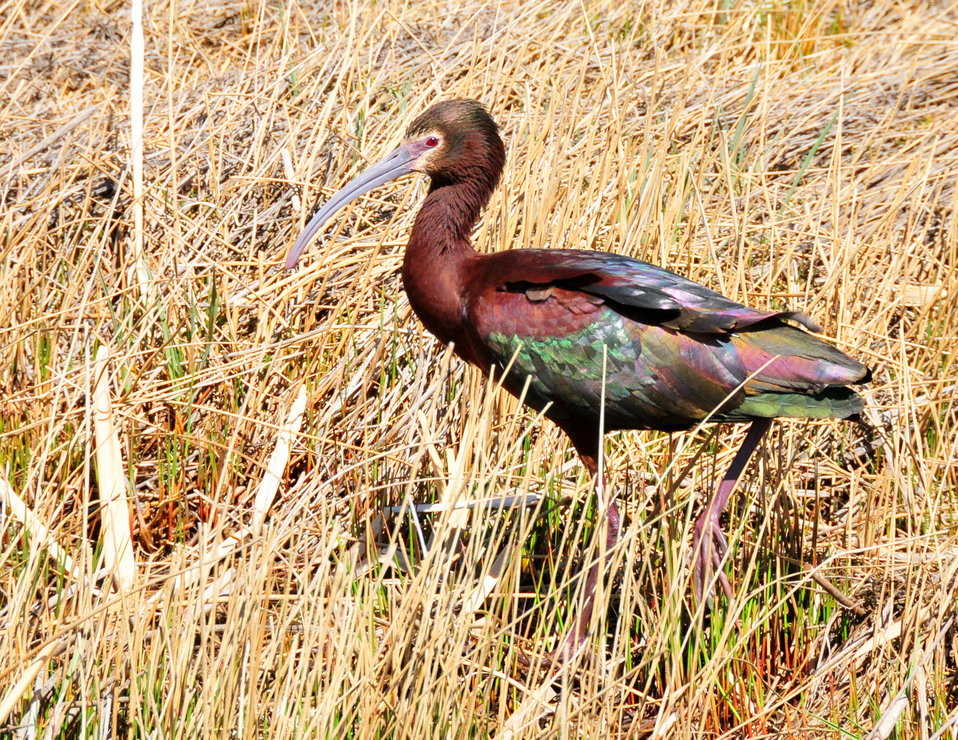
White-faced ibis on Seedskadee NWR

A white-faced ibis feeding in seasonal wetland on Seedskadee National Wildlife Refuge. Irridescent purple, green, and blue feathers give this unique looking bird an amazing range of colors.